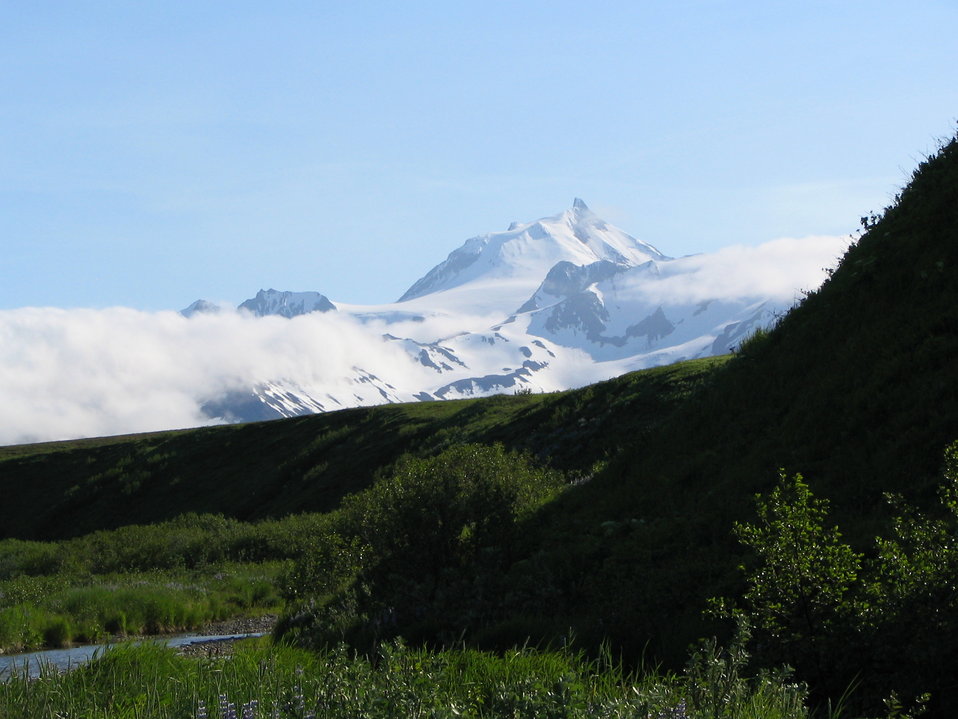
Frosty Peak

Izembek National Wildlife Refuge